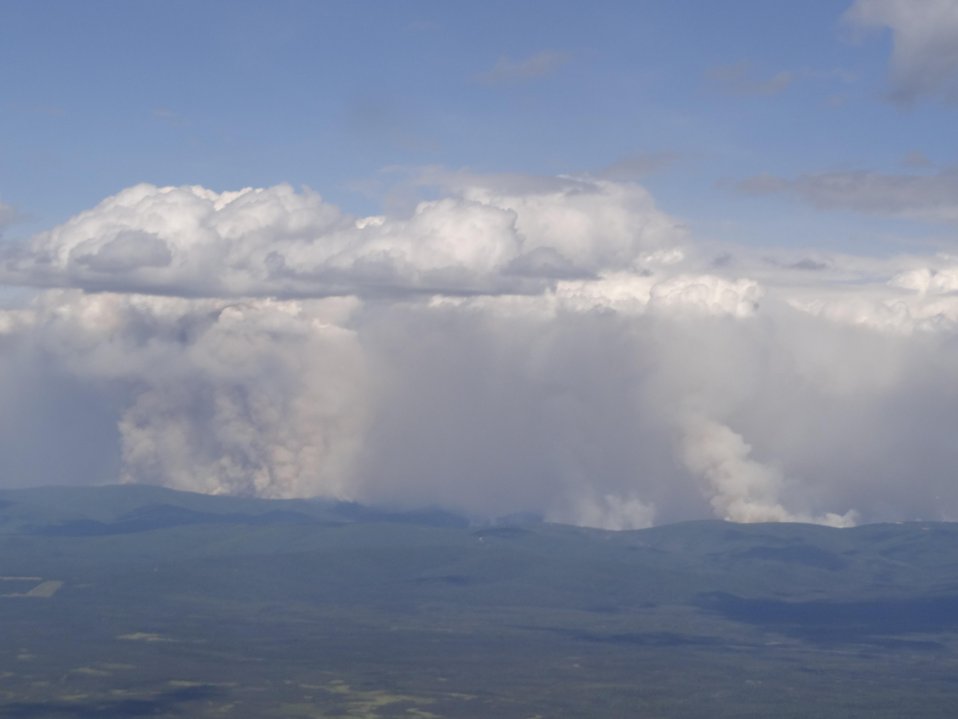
Looking east at the Stewart Creek Fire. The Stewart Creek Fire located 25 miles east of North Pole, AK began on Jun. 19, 2013 due to human causes and has consumed an estimated 85, 475 acres. The fire is approximately 57% contained.